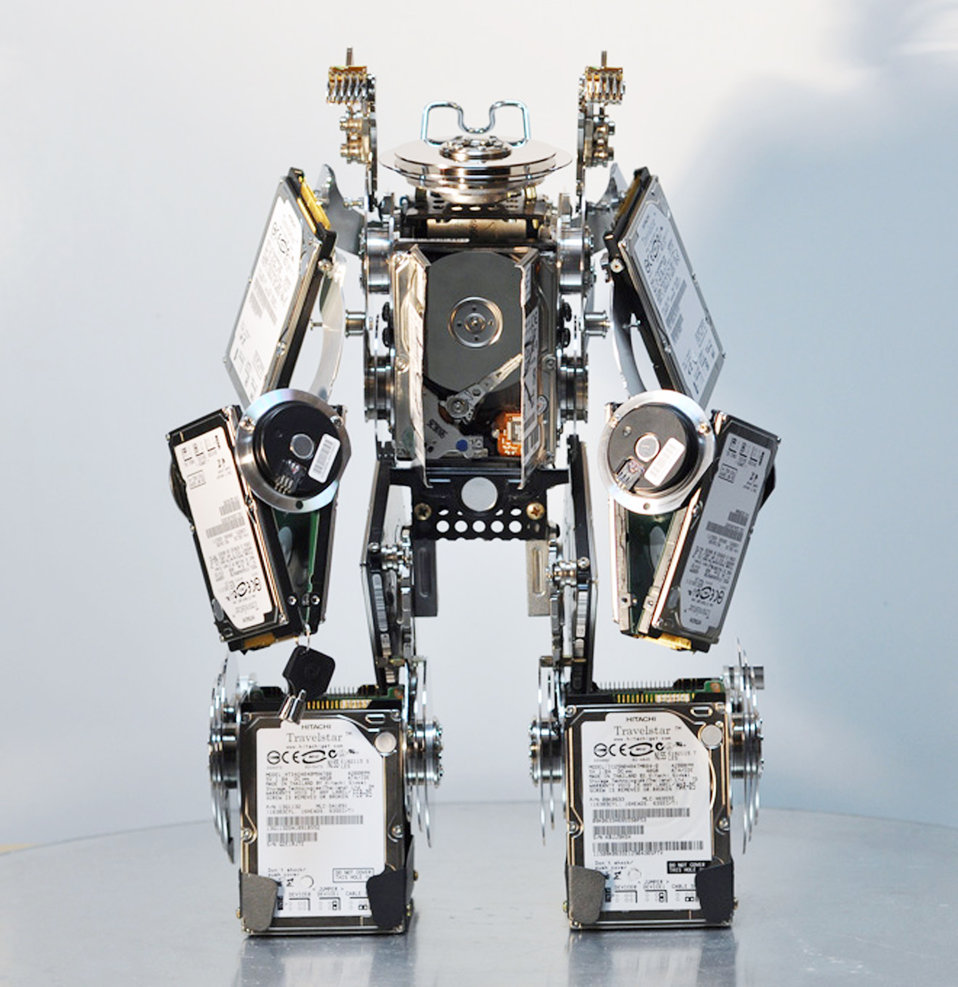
Old hard drive components become medium for unique artwork

Miguel Rivera created this robot sculpture from old hard drive components. It took him almost two full weeks to complete. Mr. Rivera is a 386th Expeditionary Communications Squadron systems administrator in Southwest Asia.